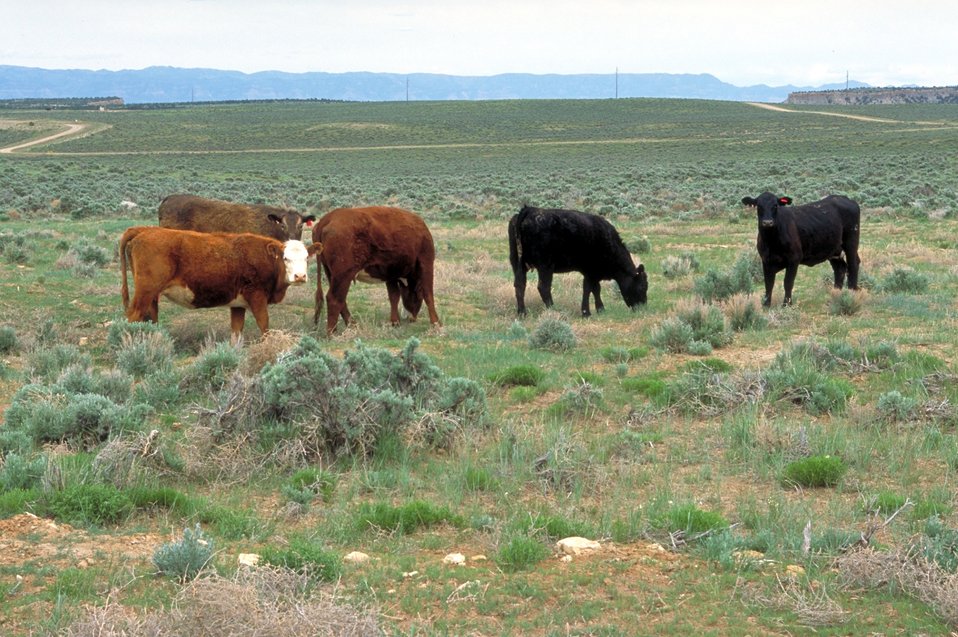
Livestock grazing on BLM lands near Price, Utah.